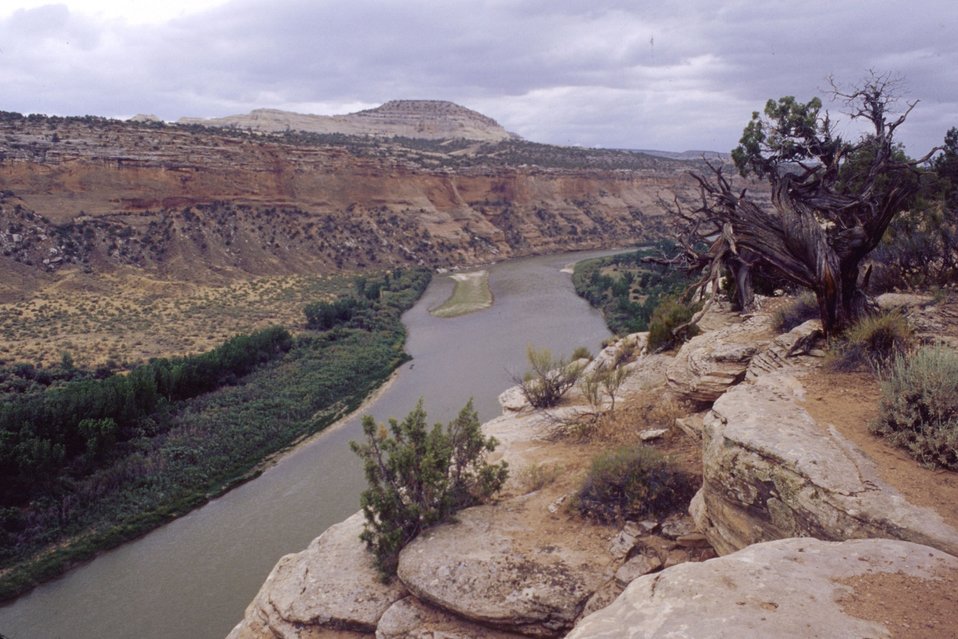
Colorado River near Ruby Canyon